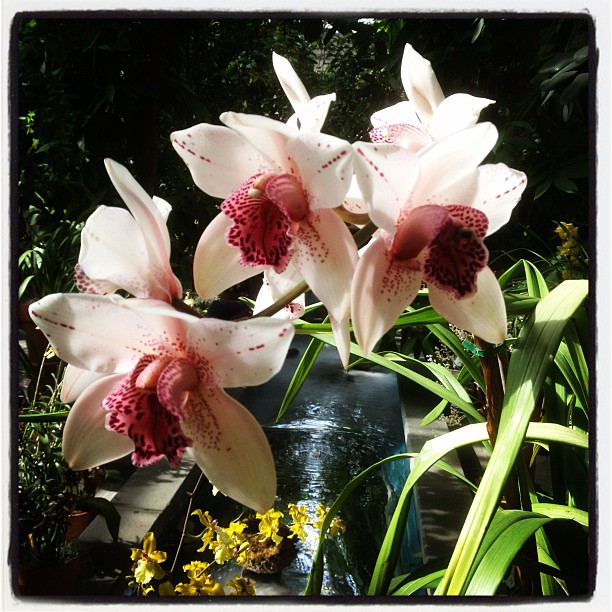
Orchid exhibit now open at USBG. Cymbidium featured in this pic.